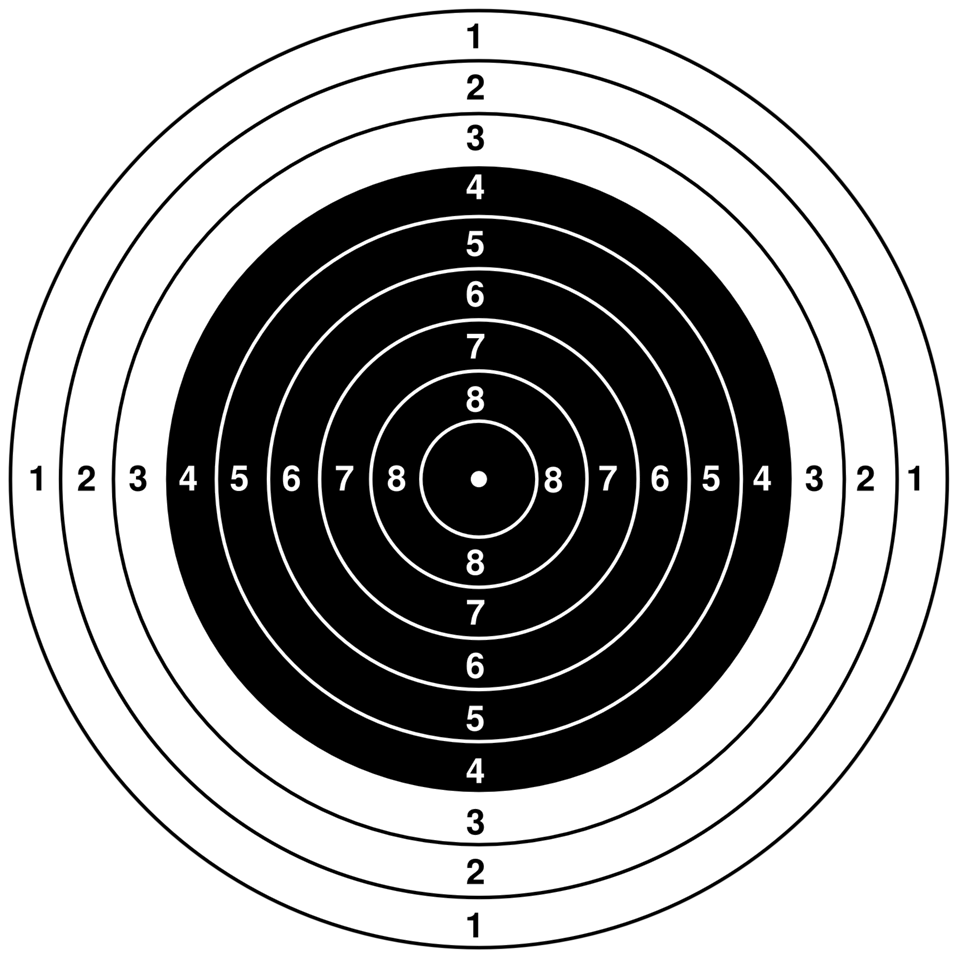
Conversion of :Image:10 m Air Rifle target 2.jpg to an SVG.